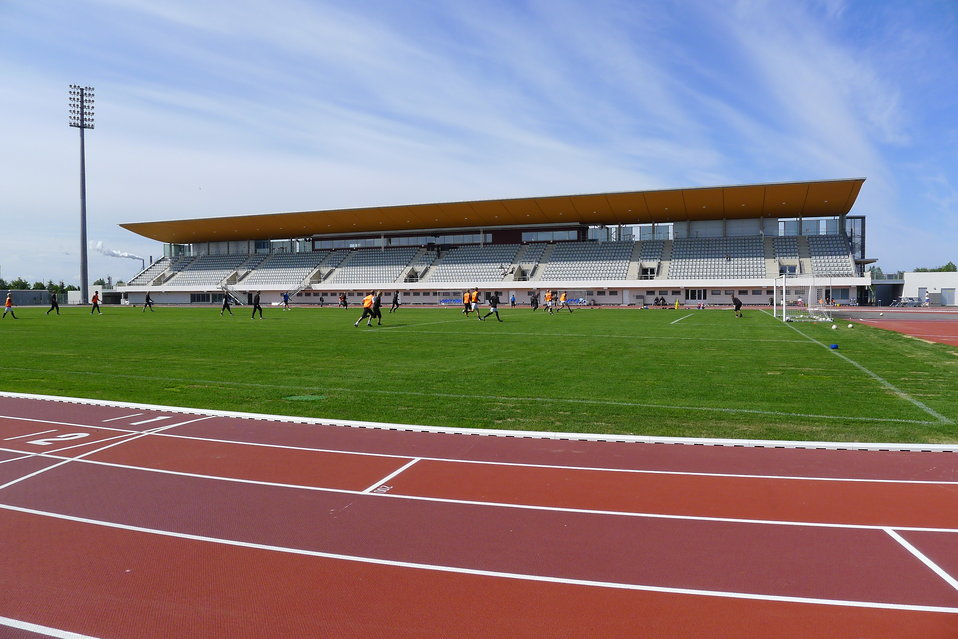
Raatti Stadium in Oulu, Finland. Suomi: Raatin stadion Oulussa